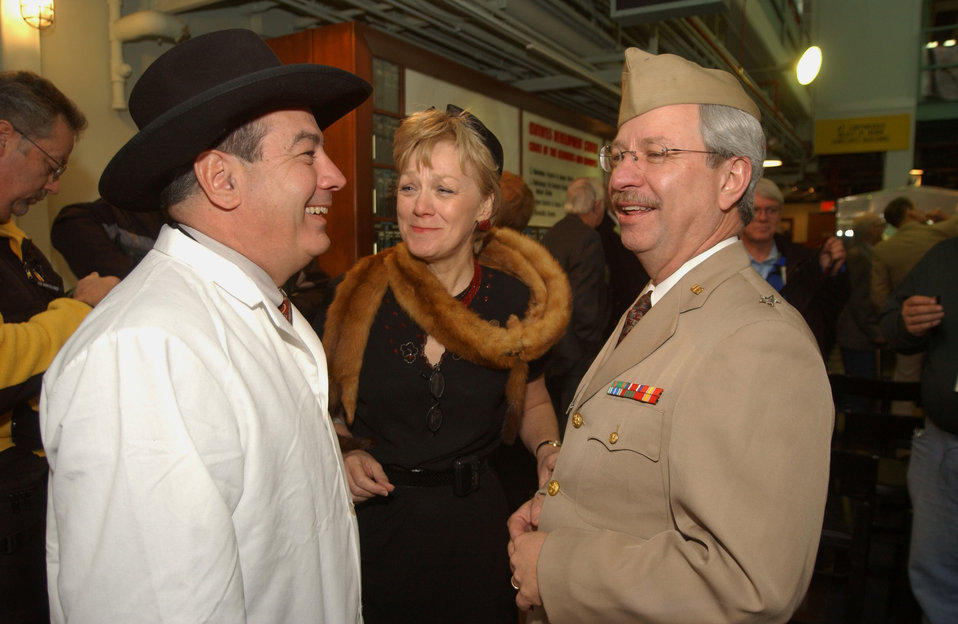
60th Anniversary ORNL Graphite Reactor

03-027 DOE photo Lynn Freeny 2003 Oak Ridge Tennessee